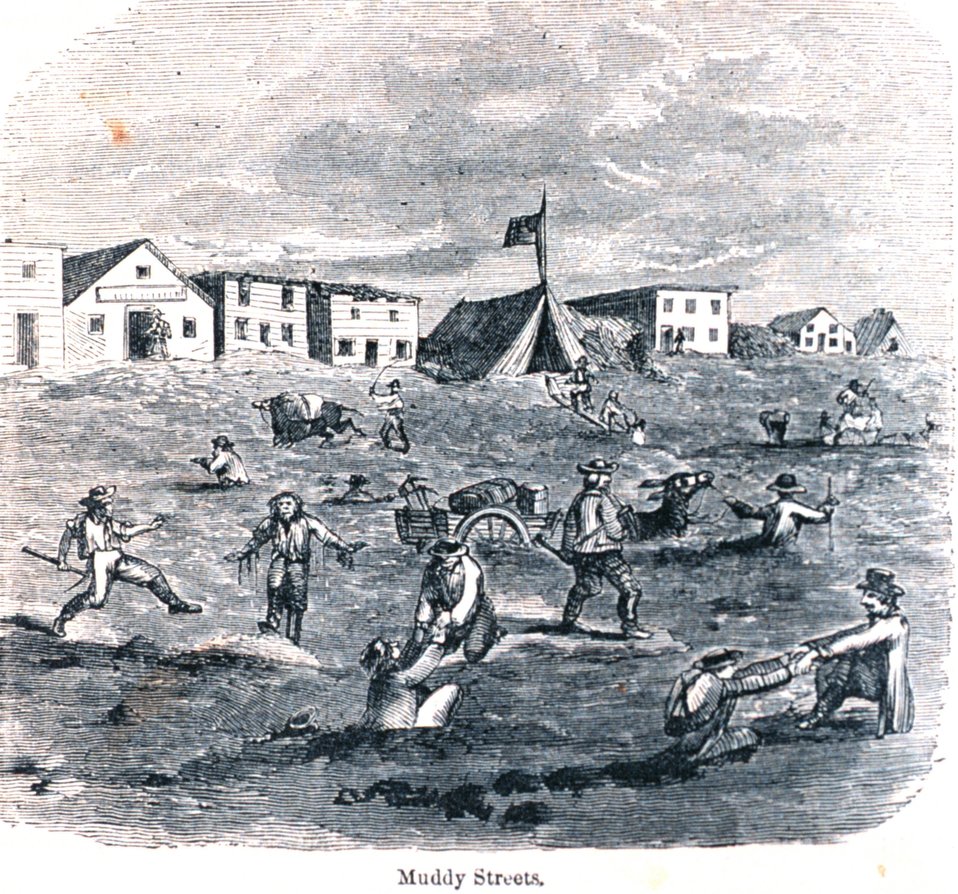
Muddy streets in San Francisco. In: 'The Annals of San Francisco'. Frank Soule, John Gihon, and James Nesbit. 1855. Page 244. D. Appleton & Company, New York. F869.S3.S7 1855.